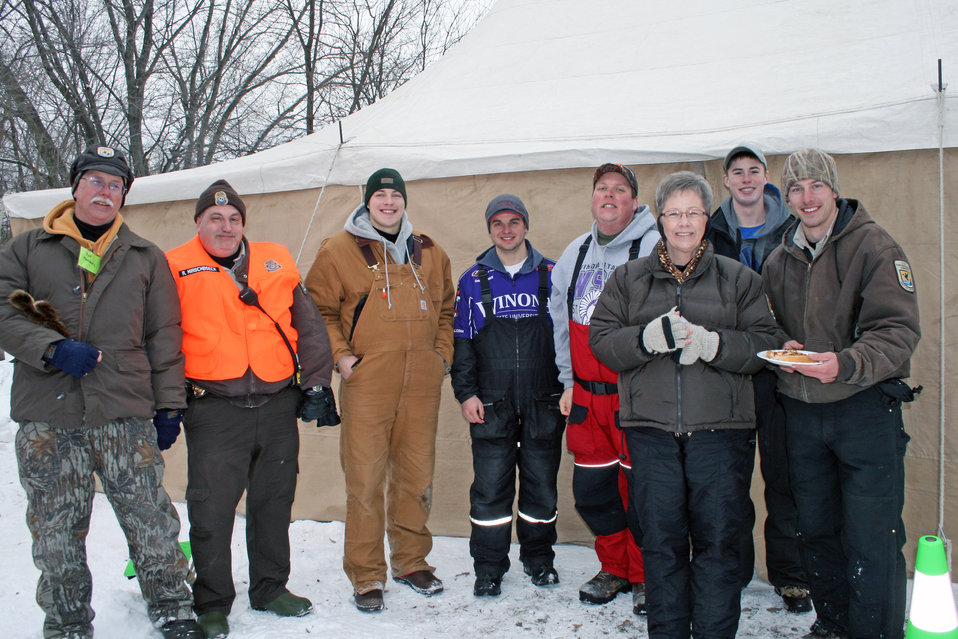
Fishing Club

Members of the Winona State University Fishing Club joined the Refuge staff at the annual youth ice fishing event.